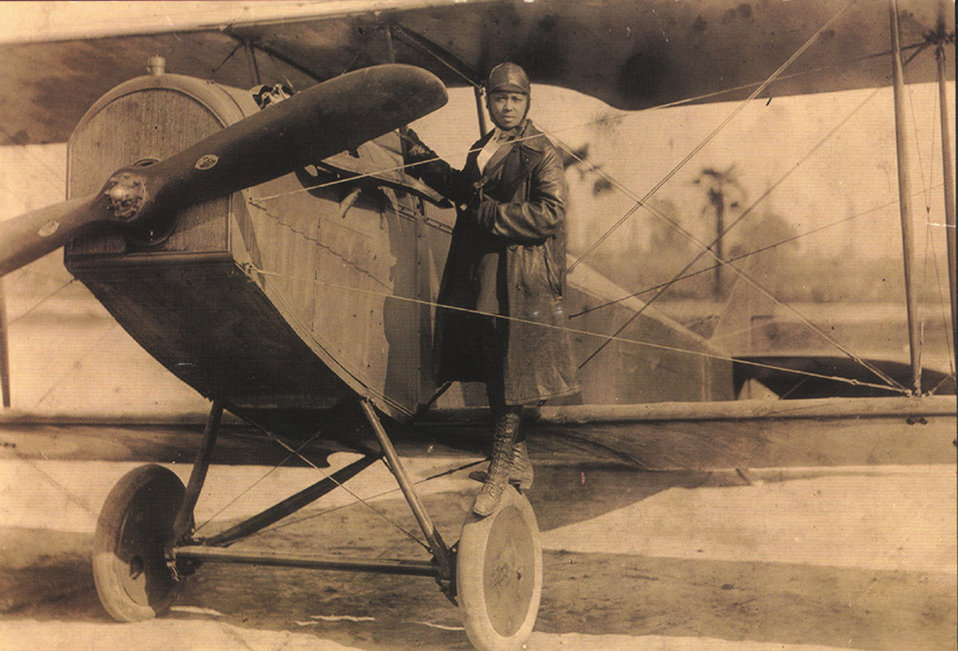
Bessie Coleman begins series highlighting African-Americans who made impact on aviation

Bessie Coleman: First African-American female pilot performed aerial shows throughout the U.S.